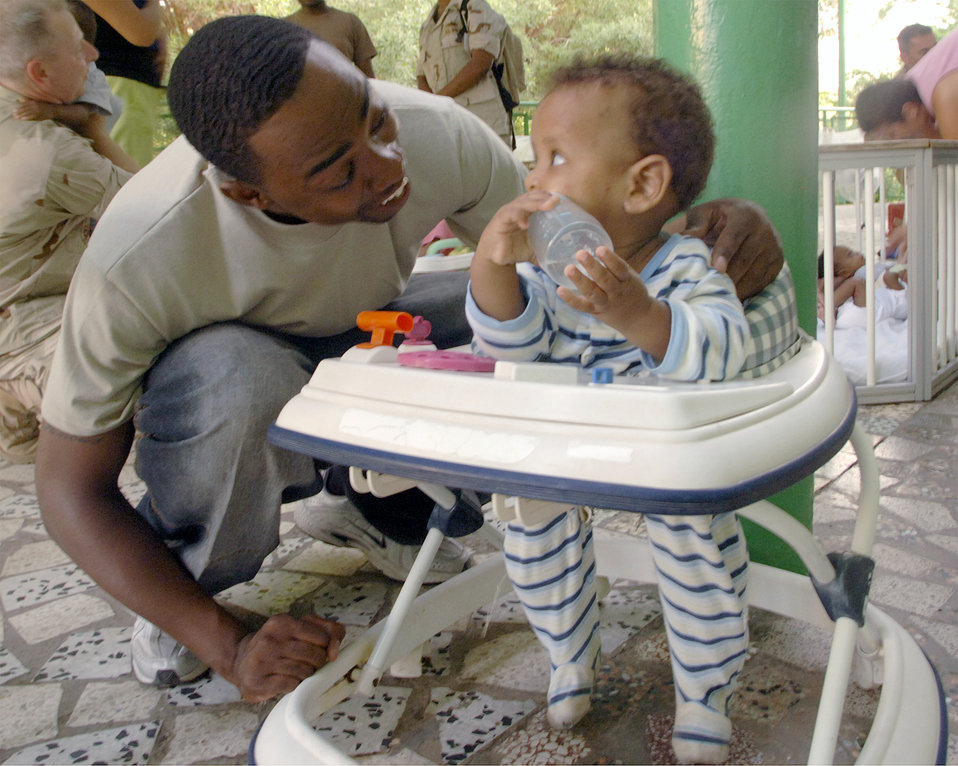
Servicemembers provide a little TLC

Staff Sgt. Adrian Mask plays with an orphaned toddler at the Franciscan Missionaries of Notre Dame Baby Orphanage in Djibouti City, Djibouti. Sergeant Mask is an air traffic control liaison for N-3 Navy Operations and is deployed to Camp Lemonier, Djibouti, from the 49th Operations Support Squadron at Holloman Air Force Base, N.M. Sergeant Mask volunteers as often as his schedule allows to help feed and play with 40 orphaned children.